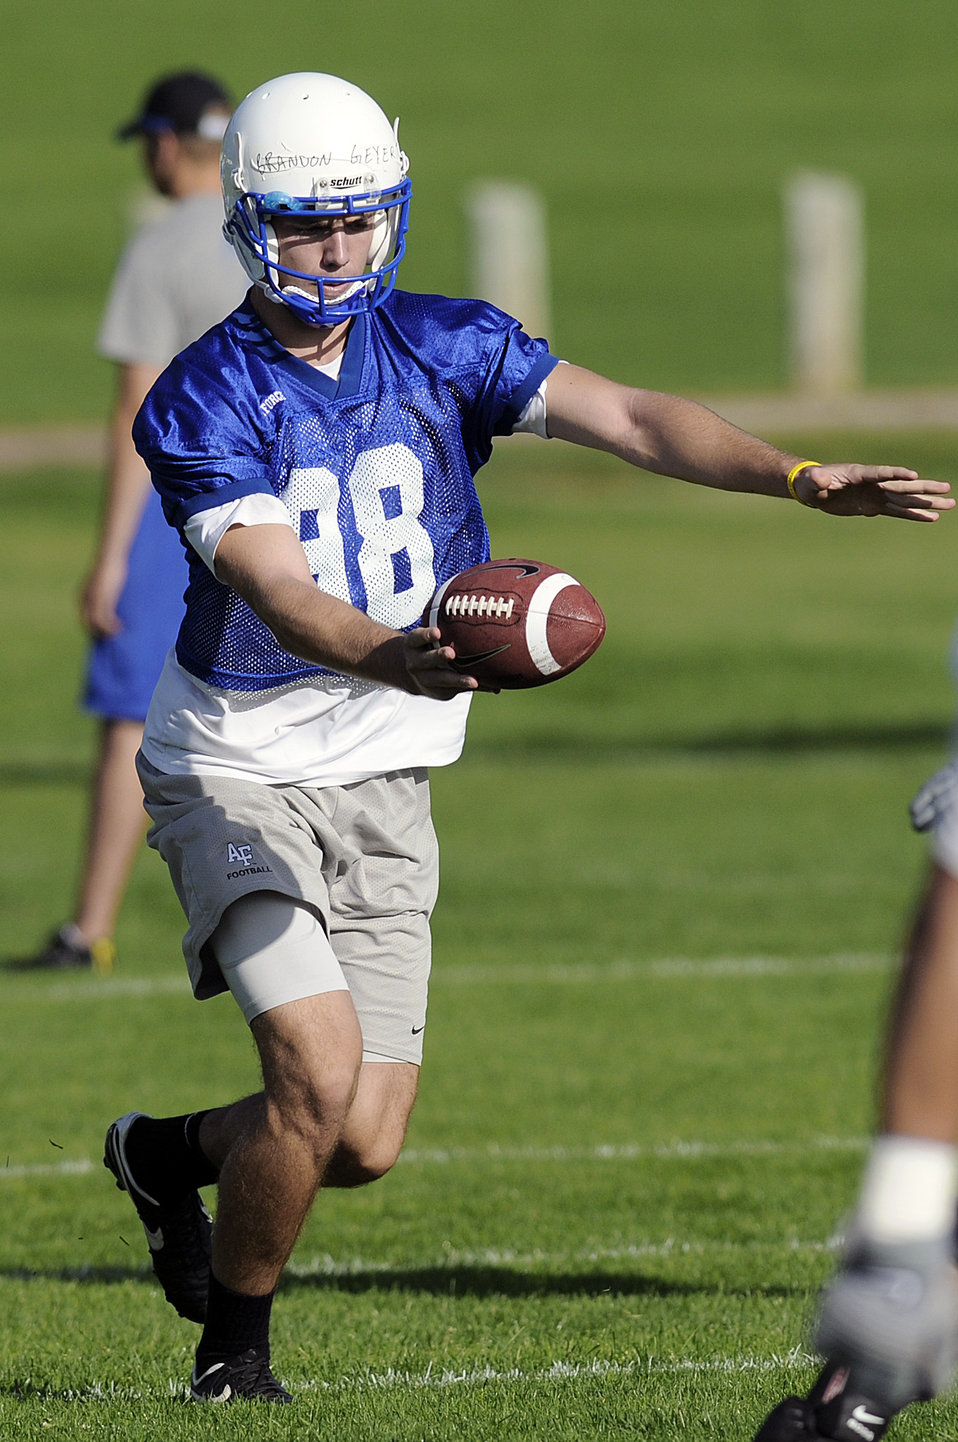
Academy football drills

Air Force Academy senior Brandon Geyer punts during special teams drills during football practice Aug. 4 at the U.S. Air Force Academy near Colorado Springs, Colo. The Falcons host the Nicholls State Colonels Sept. 5 in their home opener.